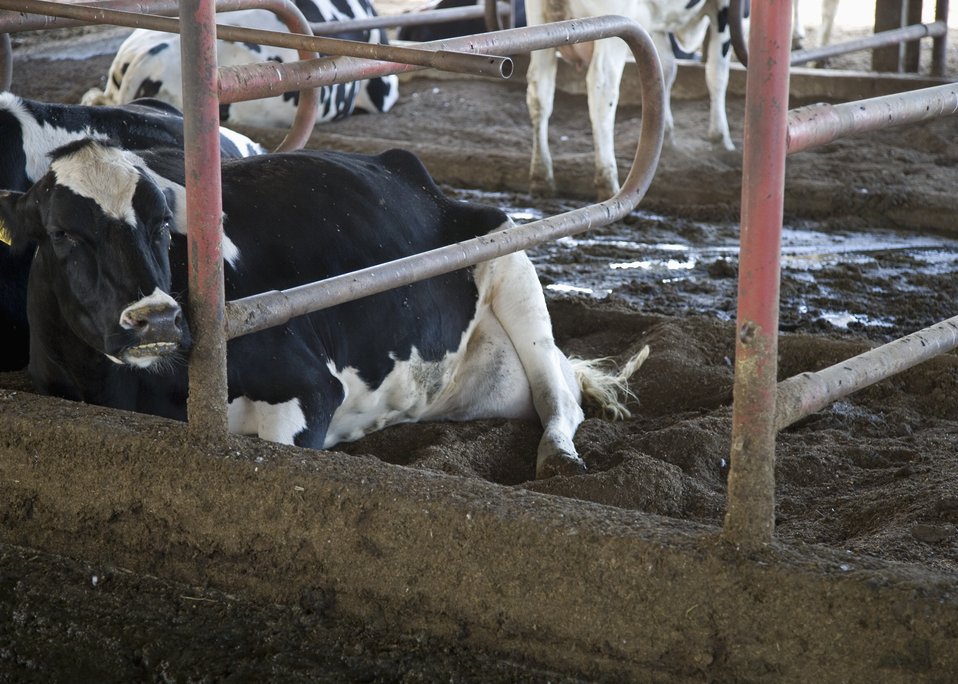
Compost dairy beds. California.